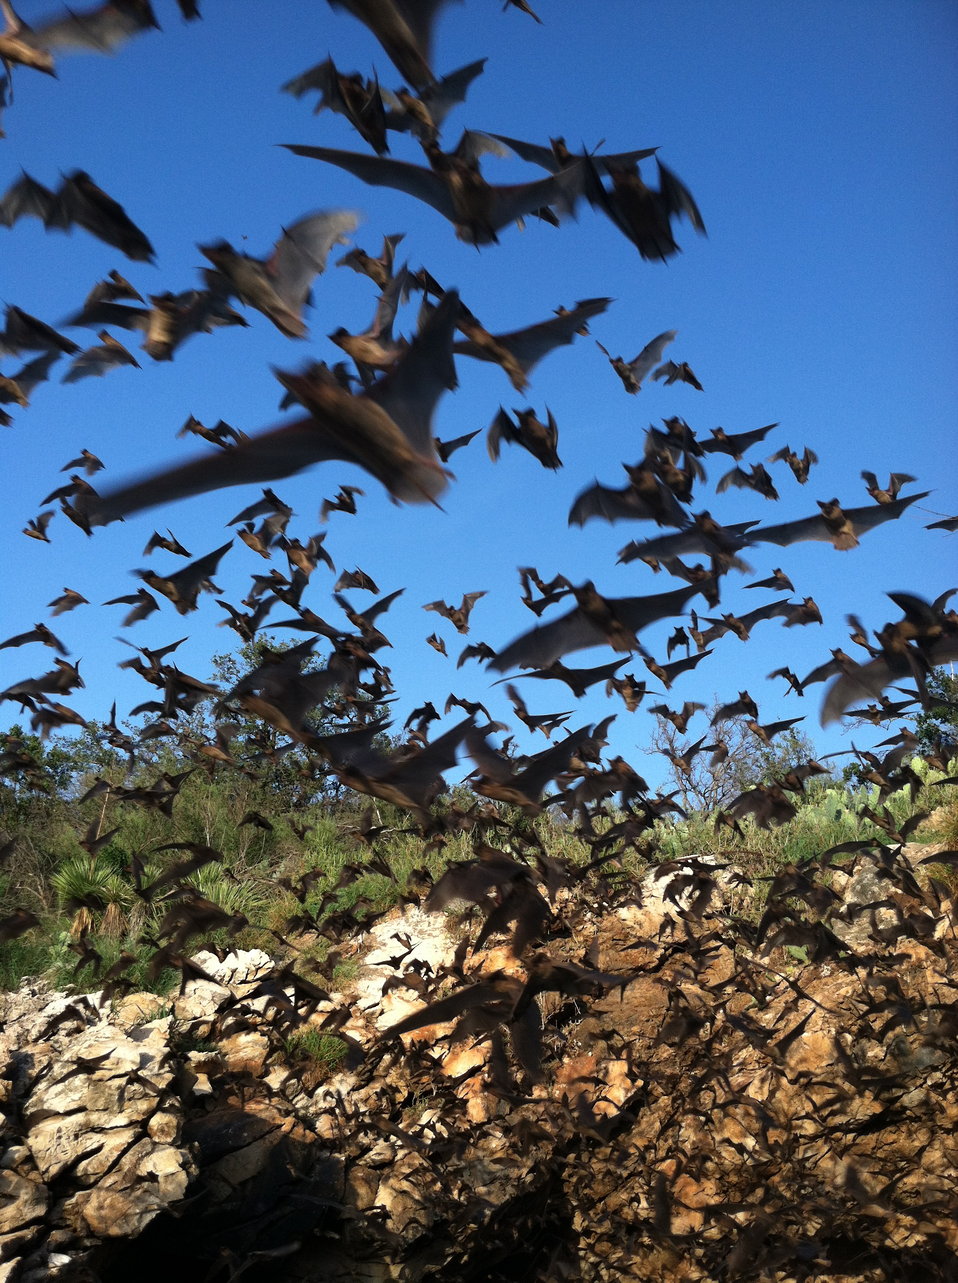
Mexican free-tailed bats